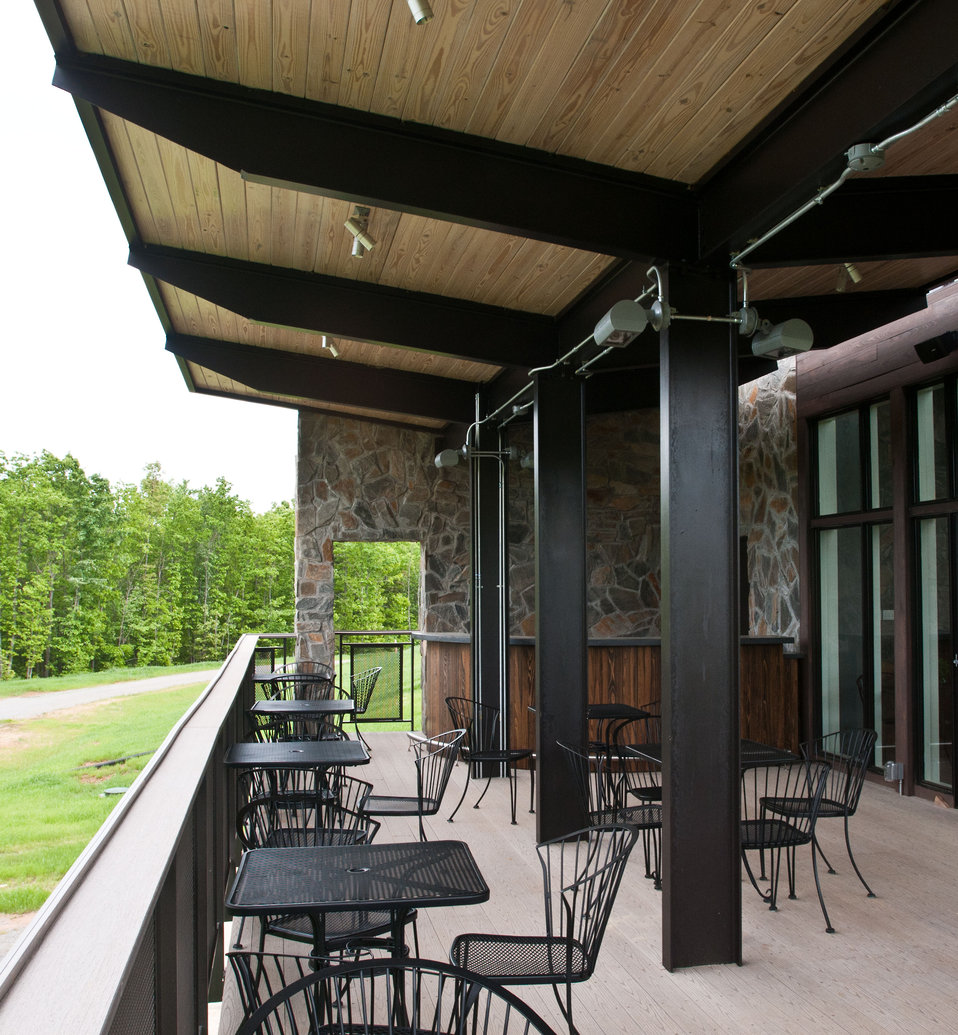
Cooper Vineyards in Louisa, VA, is the first winery on the East Coast and the second in the country to be awarded the fourth and highest, Platinum certification by Leadership in Energy and Environmental Design (LEED).
From a Virginia Wine Board Marketing Office press release, “The process of building a LEED platinum certified building was initially more expensive and arduous than co-owners, Jacque Hogge, MD and Geoffrey Cooper, MD expected, but they were able to get financial assistance from the United States Department of Agriculture. “Know that there are grants available to help with the costs of sustainable building projects,” Hogge advises to other potential green wineries. Cooper Vineyards received 2 of the 3 USDA (U.S. Department of Agriculture Rural Development (RD) Rural Energy Financing program) grants awarded in Virginia in 2010 to help with the expenses of their construction.”
Rural Energy Financing program focuses on loan guarantees, loans and grants to agricultural producers, businesses, cooperatives and rural residents for renewable energy systems and to make energy efficiency improvements.
The tasting room and building collects rainwater from the roof; uses low flow water fixtures to reduce usage by 40%; utilizes structurally insulated panels for the roof and walls; heats and cools the entire building using a geothermal system that includes pipes that are embedded in the parking lot; low-voltage LED lighting with daylight and occupancy sensors provide ample light when it is needed; a solar panel array provides more than 15% of the energy needs for the building, and much of the construction materials are from local and recycled material sources. For more information about USDA please go to www.usda.gov, Rural Development and Rural Energy Financing. LEED was developed by the U.S. Green Building Council (USGBC) is a 501 c3 non-profit organization committed to a prosperous and sustainable future for our nation through cost-efficient and energy-saving green buildings.